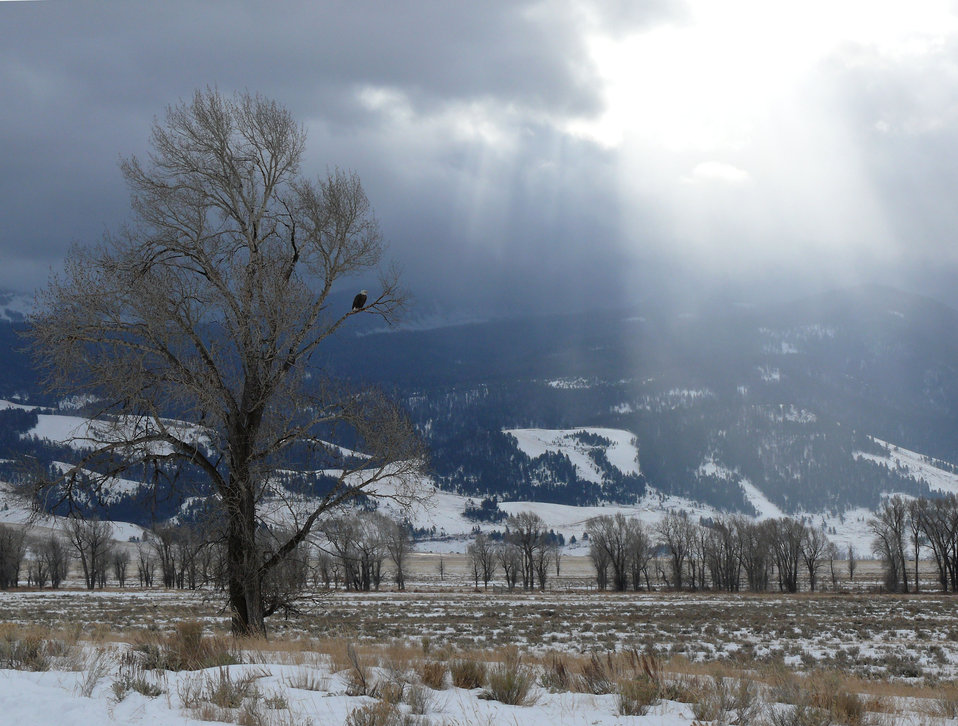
Ethereal View

Sunlight fights its way through thick cloud cover on the National Elk Refuge as a bald eagle keeps watch.

Credit: USFWS / Steve Koob, National Elk Refuge volunteer